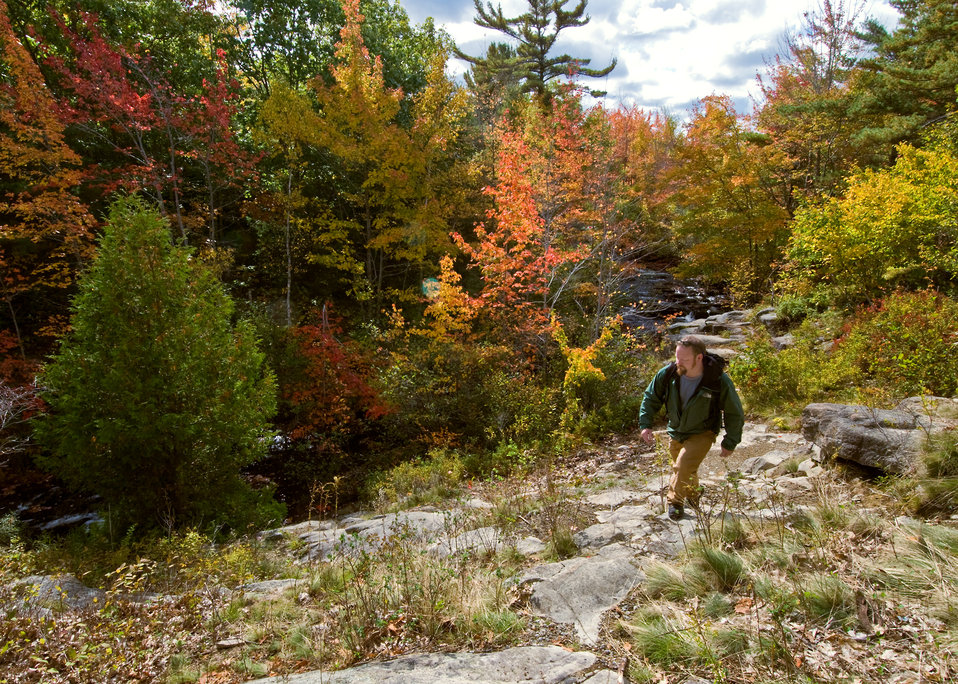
Hiking is one of the many popular outdoor recreational activities in the National Forests of United States . A hike on a National Forest trail in the White Mountain National Forest in Maine during the fall offers a kaleidoscope of color.